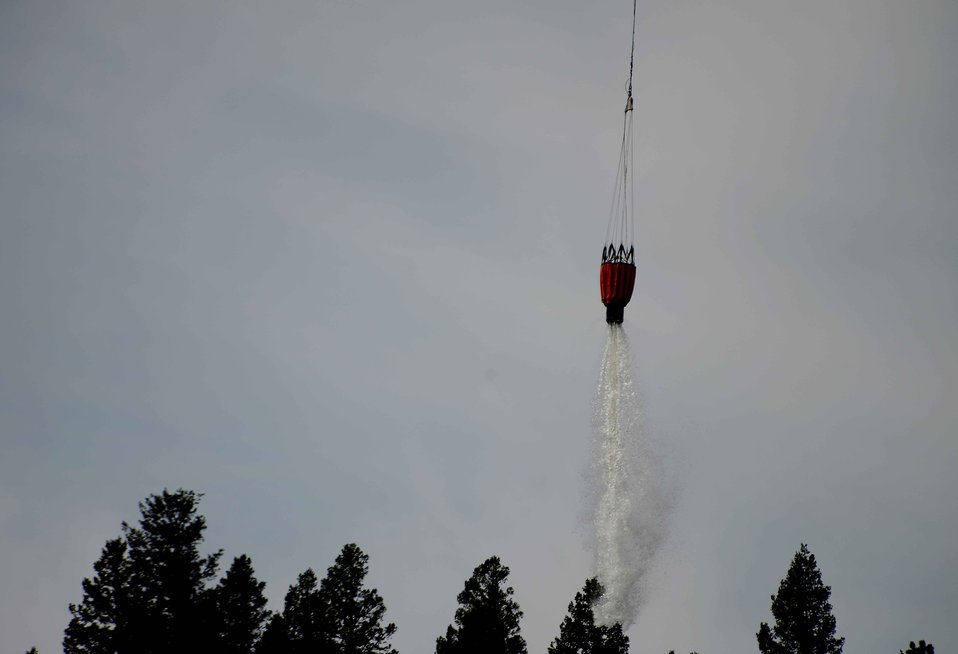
Water drop

A helicopter drops water onto a hot spot as fires still burn in the Mount Saint Francois area of Colorado Springs, Colo., June 28, 2012. Air Force and civilian firefighters continue to fight the Waldo Canyon fire.